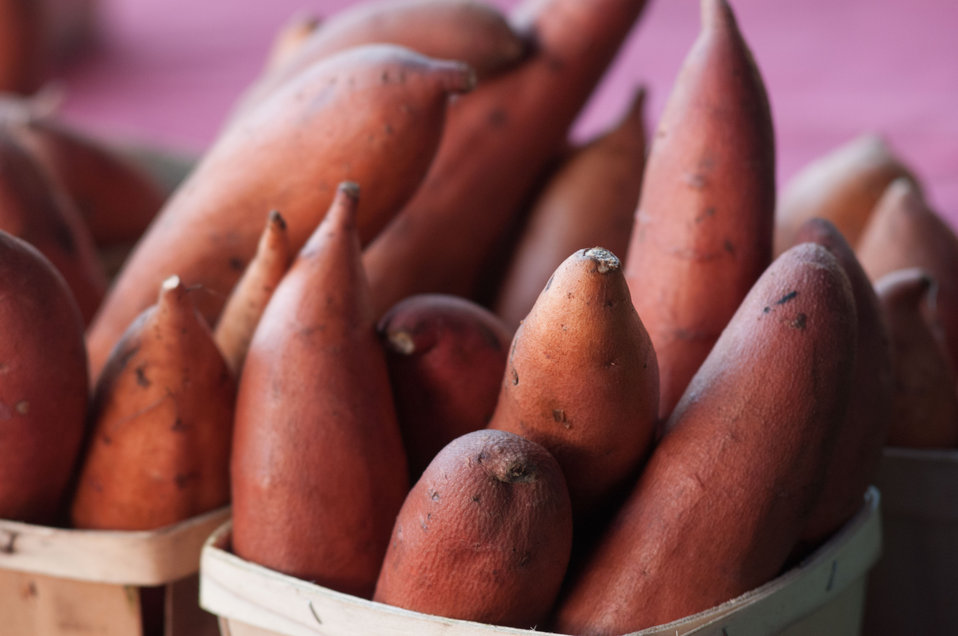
Worden Farm (www.wordenfarm.com) fresh picked organic sweet potato are ready for sale at the Saturday Morning Market, in St. Petersburg, FL, on April 14, 2012. Worden Farm is a family farm that provides certified organic produce to Southwest Florida through community supported agriculture (CSA) membership programs and retail sale at several farmer’s (community) markets. Chris Worden, Ph.D. and Eva Worden, Ph.D. founded and operates the farm that employs more than 20 people. Growing certified organic crops in the coastal sandy soil has required them to develop innovative farming techniques which help the farm as well as assist the studies of universities and farm industry. There are several Worden Farm apprenticeships that provide hands-on training in all aspects of the farm, to include direct marketing at the Saturday Morning Market, or other market sites. The farm also holds culinary and gardening workshops, and other interactive educational events. One of their organic certifications is from the U.S. Department of Agriculture (USDA) and they have partnered with the USDA Natural Resources Conservation Service (NRCS) for soil conserving windbreaks and long tunnel structures to nurture seedlings and extend the growing season.